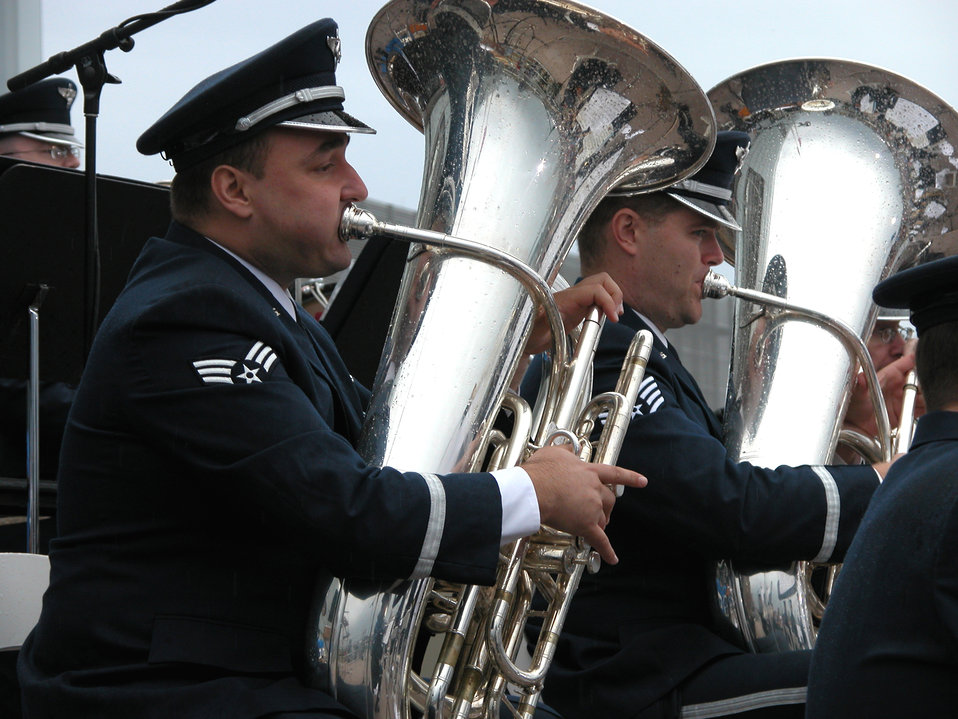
Presidential performance

LITTLE ROCK, Ark. -- Tuba players Senior Airman Matt Kuebler (left) and Staff Sgt. David Hartung belt out a song at the William J. Clinton Presidential Library grand opening here Nov. 18. They are assigned to the U.S. Air Force Band of Mid-America at Scott Air Force Base, Ill.